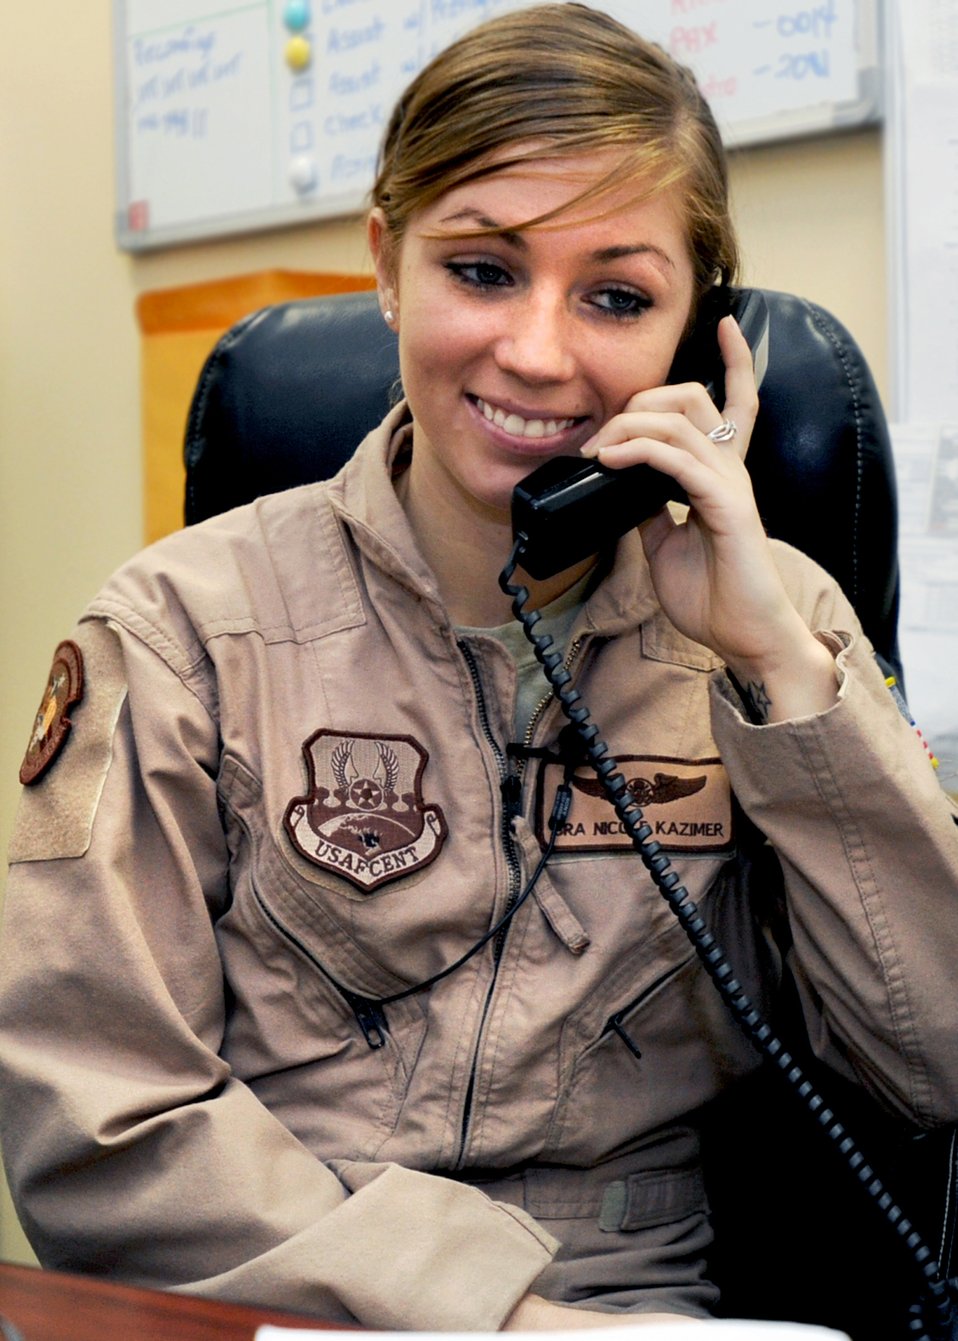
Presidential phone call

Senior Airman Nicole Kazimer, a C-130 Hercules loadmaster assigned to the 737th Expeditionary Airlift Squadron at an air base in Southwest Asia, speaks to President Barack Obama on the telephone Thanksgiving Day, Nov. 25, 2010. One of a handful of servicemembers chosen from U.S. Central Command to talk with the president, Airman Kazimer regularly flies combat airlift missions that deliver troops and supplies to locations across Southwest Asia.